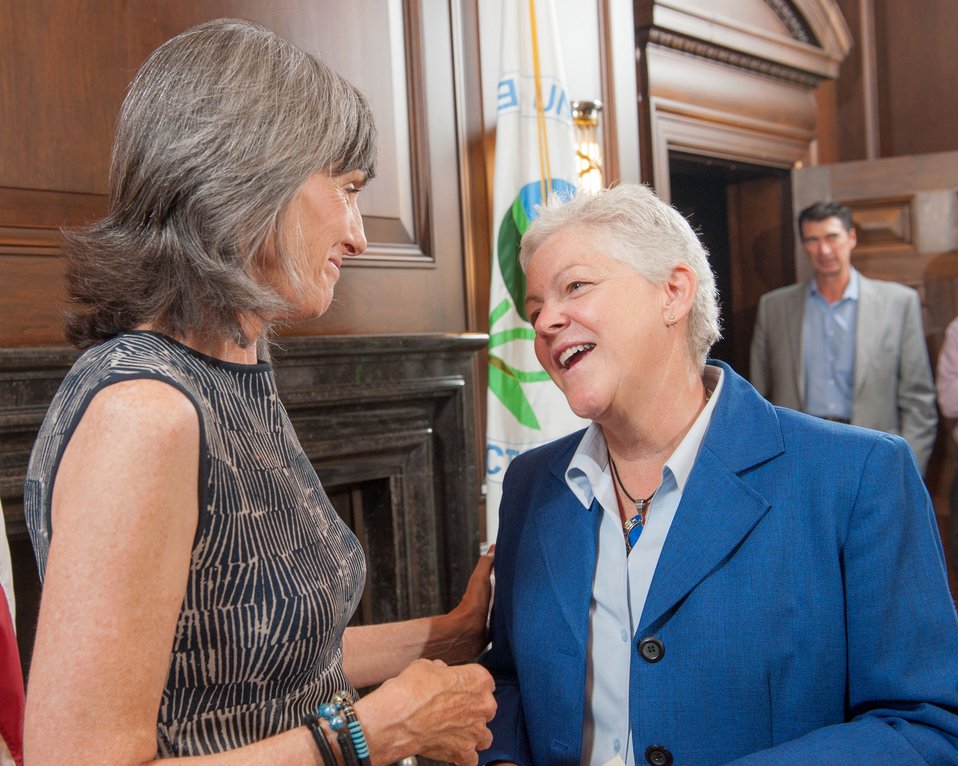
July 19, 2013 – Former EPA Administrator Carol Browner and Current EPA Administrator Gina McCarthy

During a private ceremony at EPA, friends and close staff members celebrated the confirmation of Gina McCarthy’s new leadership. Following her oath, McCarthy thanked Deputy Administrator Bob Perciasepe for the leadership he has provided “and will continue to provide to the Agency.” She pledged to do her best for President Obama, highlighting his unparalleled commitment to environmental protection and the Administration’s ongoing efforts to address climate change. She concluded her remarks by calling this a “wicked cool day” amid cheers from attendees.

USEPA Photo by Eric Vance. Public domain image